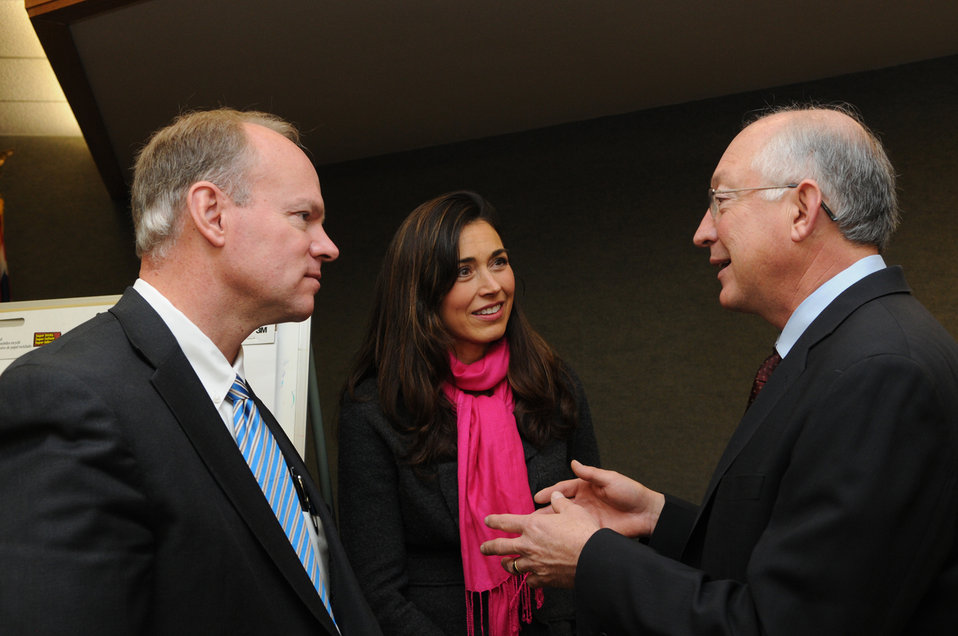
Wyoming - Gov Mead, Mrs Mead, and Sec Salazar

Governor Mead of WY & Mrs Mead with Secretary Salazar

Secretary Salazar Attended a Sage Grouse Meeting in Wyoming